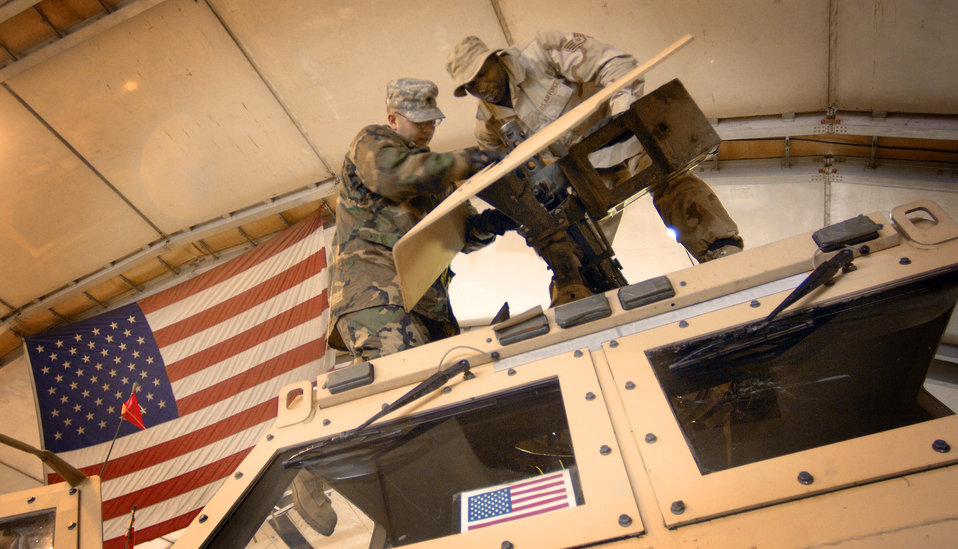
4 million miles

BALAD AIR BASE, Iraq (AFPN) - Staff Sgt. Lee Moses (right) teaches Army Spc. Thomas Brey how to dismount a 50-caliber machine gun on an armored truck turret. The Airman and Soldier are with the 723rd Expeditionary Logistics Readiness Squadron. The unit achieved its 4-millionth convoy mile. The first convoy began two years ago.